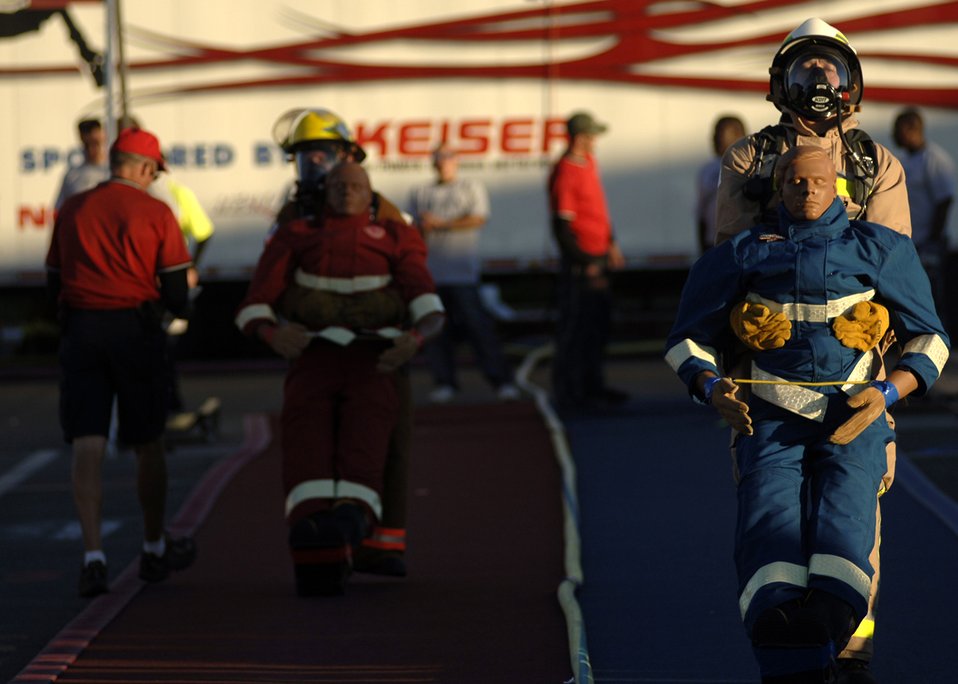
Finish Line

Paul Weinberg, Zoll Medical, carries a 170-pound dummy while finishing the last portion of the Firefighters Combat Competition at Morrow, Ga., Oct. 13, 2006.